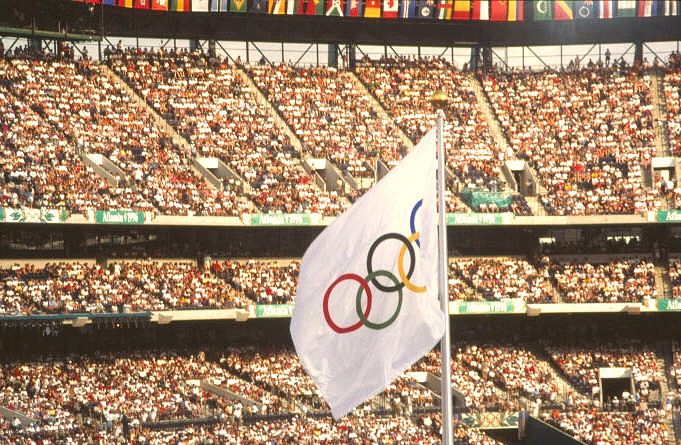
1996 Atlanta Olympics--Olympic flag at track and field venue.